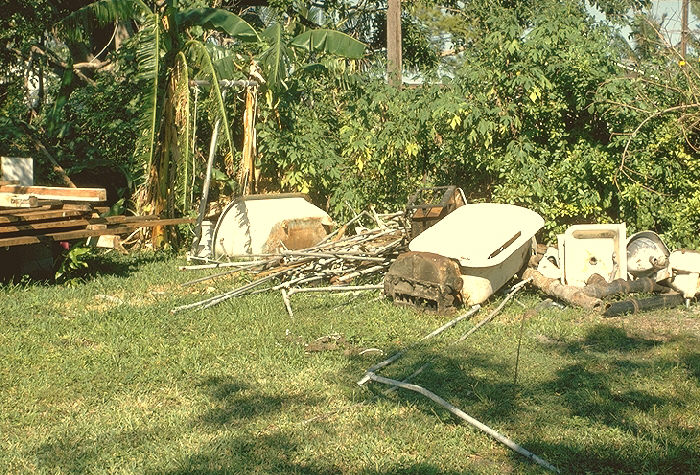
Abandoned plumbing fixtures including a bathtub in Miami, Florida, which was a potential mosquito breeding site.